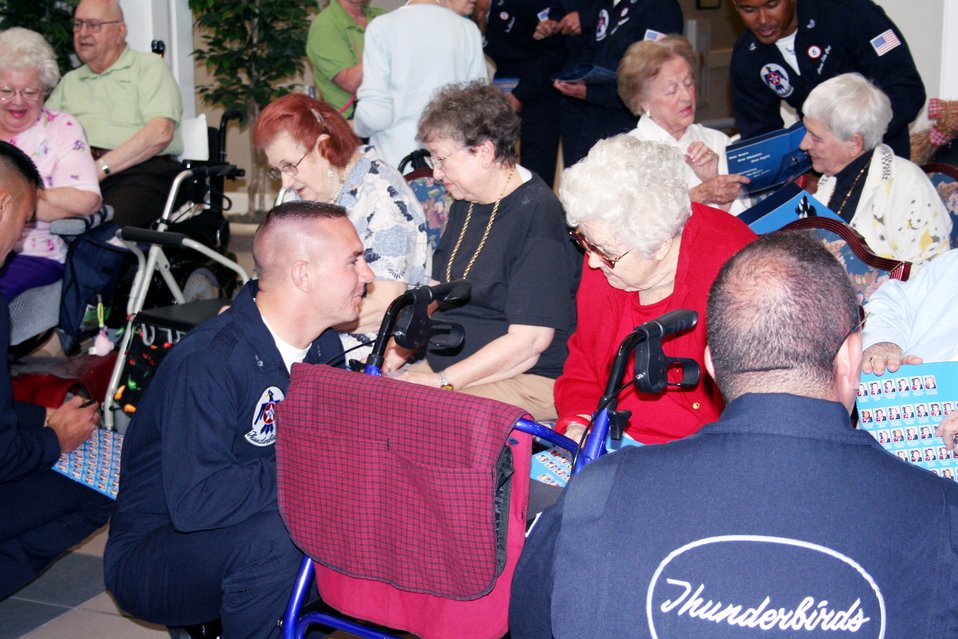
Thunderbirds' aircrew surprise widows at Enlisted Village

Aircrew members of the Thunderbirds, the Air Force's air demonstration team, visit with residents at Hawthorn House, the Air Force Enlisted Village's assisted living residence in Shalimar, Fla. When inclement weather caused the Eglin Air Show to be cancelled April 14, the Thunderbirds made a surprise visit to the Enlisted Village, a charity that provides a home for widows of enlisted servicemembers.